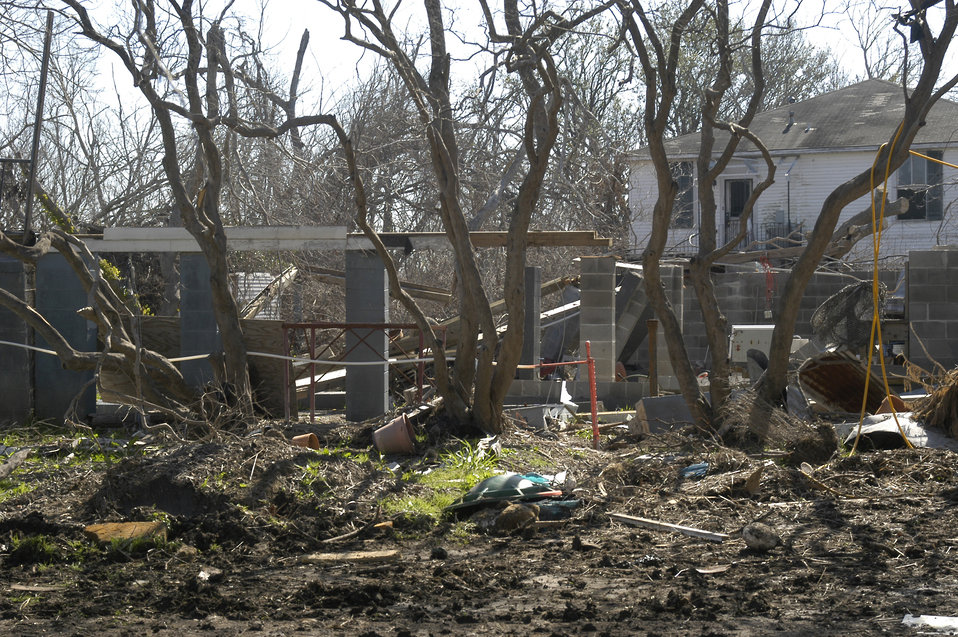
Homes in Plaquemines Parish, New Orleans, LA, were blown apart by gale force winds and flooded by Hurricane Katrina’s 20-foot storm surge that overwhelmed the city’s levees. Hurricane Katrina was the 6th strongest hurricane in U. S. history and the 5th deadliest. Katrina made landfall on Monday morning, August 29, 2005 as a Category 3 hurricane with sustained winds of 125/mph with over a 20-foot storm surge. Katrina caused catastrophic damage over 90 thousand square miles across Louisiana with an estimated $75 billion dollars in damage. The total economic impact to the Gulf Coast was estimated at over $150 billion. 80% of New Orleans, LA, was underwater with some areas more than 20 feet deep. Less than a month later southern Louisiana was struck by a second Category 3 hurricane Rita inflicting more damage in the southwestern areas of Louisiana adding an addition $12 billion worth of damage to the already beleaguered state. The U. S. Army Corps of Engineers (USACE) under the auspices of the Federal Emergency Management Agency (FEMA) was the lead service in providing assistance to the citizens of Louisiana. The U. S. Department of Agriculture (USDA) supplied emergency food aid, emergency loan assistance to farmers and home owners, and USDA personnel from around the nation volunteered their time and muscle to aid in the recovery operations.